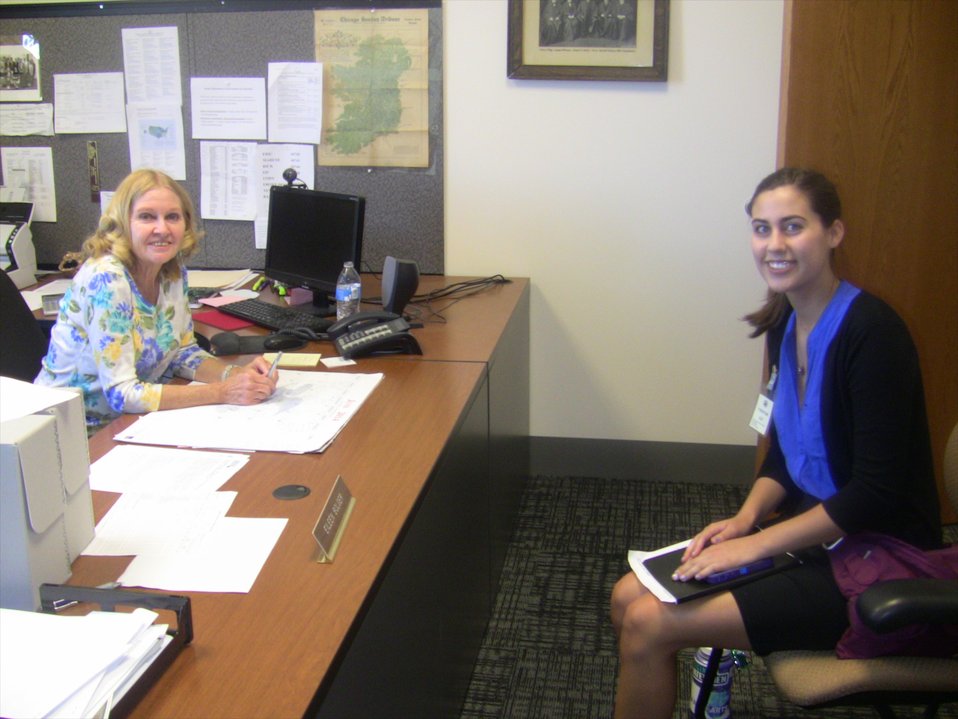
New Intern Laura Romer meeting with Eileen Bolger; Location: National Archives at Denver, Broomfield, CO